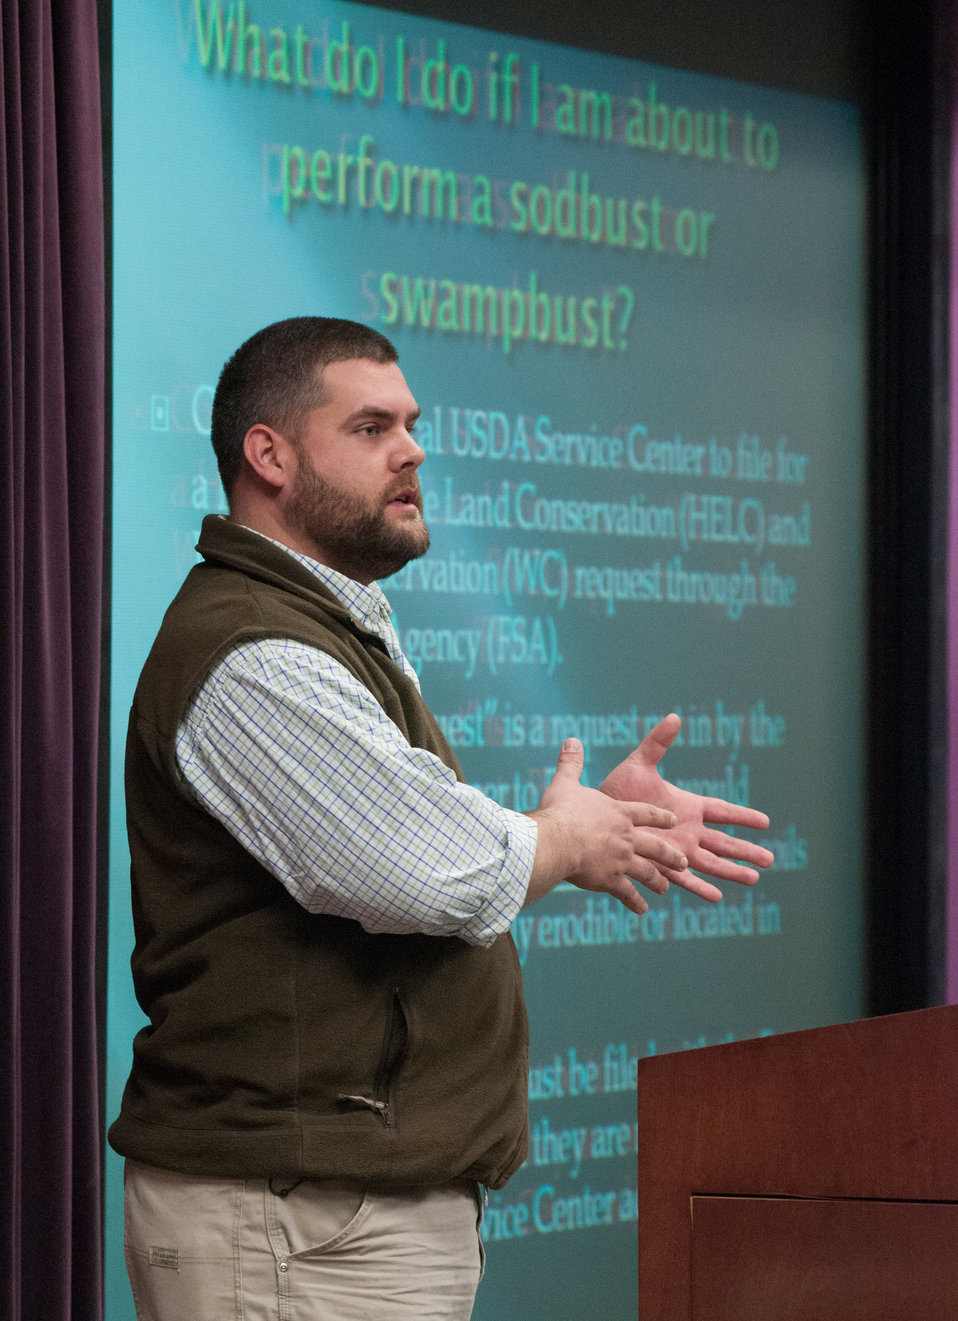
U.S Department of Agriculture (USDA) Natural Resources Conservation Service (NRCS) Amelia County District Conservationist Derek Hancock talked with farmers about NRCS tools and information that may be of interest to them and how to reach NRCS people that support their area, during the “Virginia State University (VSU), USDA and Virginia Farmers Working Together” outreach workshop in the VSU, L. Douglas Wilder building on Thursday, March 7, 2013, in Petersburg, VA. Farmers shared and learned new ways to do more with USDA services, and how to apply for programs that will help grow their business.